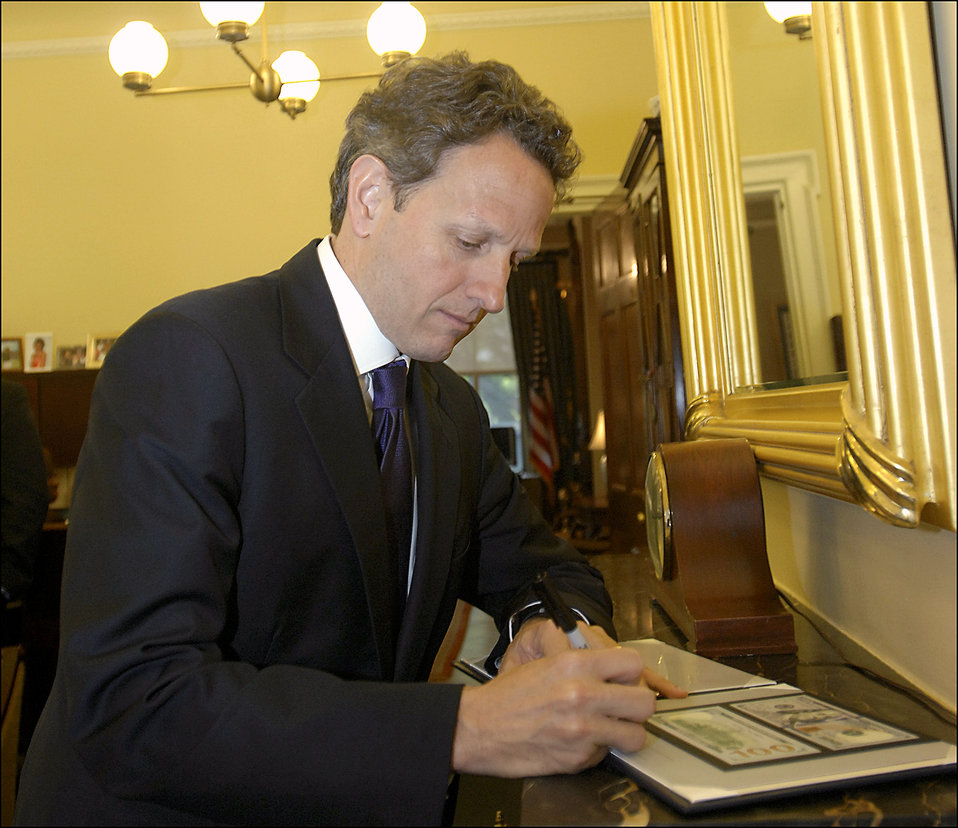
Unveiling of new $100 note, 4/21/2010

Treasury Secretary Geithner comparing the old and new $100 note at the Treasury Department on April 21, 2010.